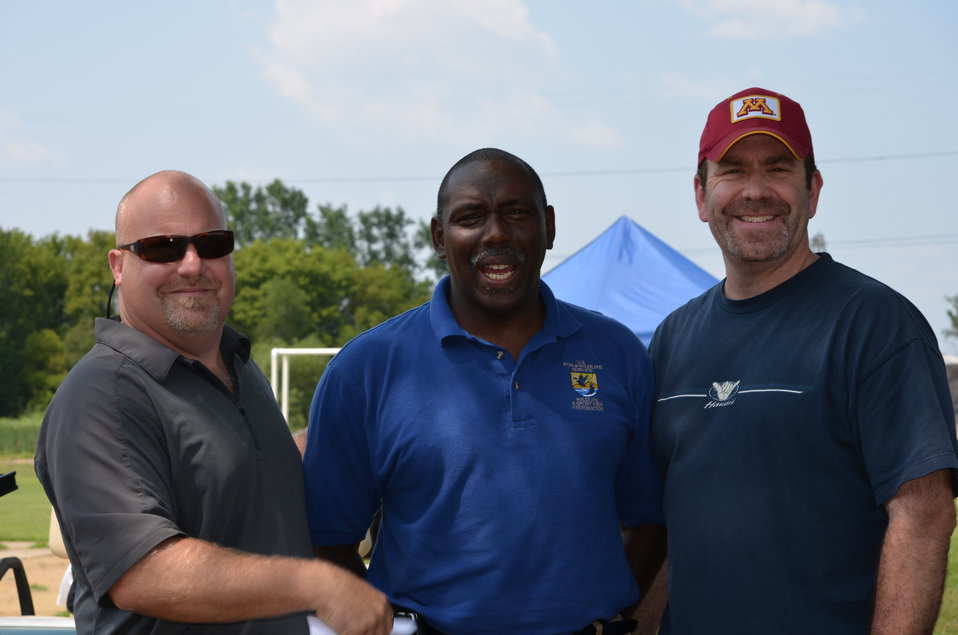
Jerome Ford, AD Migratory Birds, with shooters who attended the event.